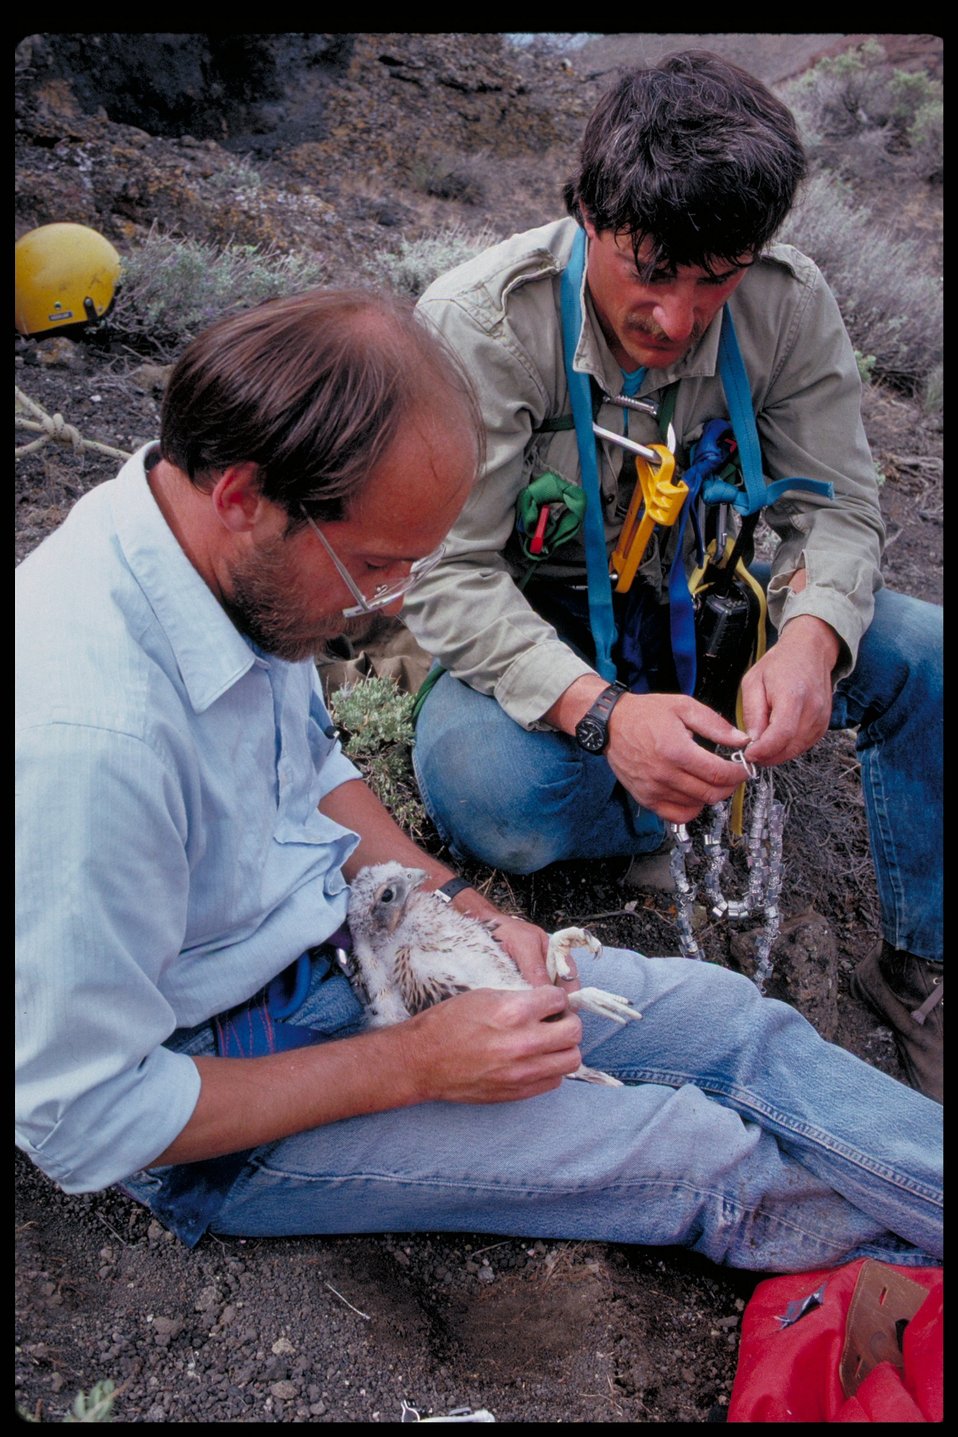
Research Birds of Prey National Conservation Area BOP Owyhee Field Office LSRD Lower Snake River District